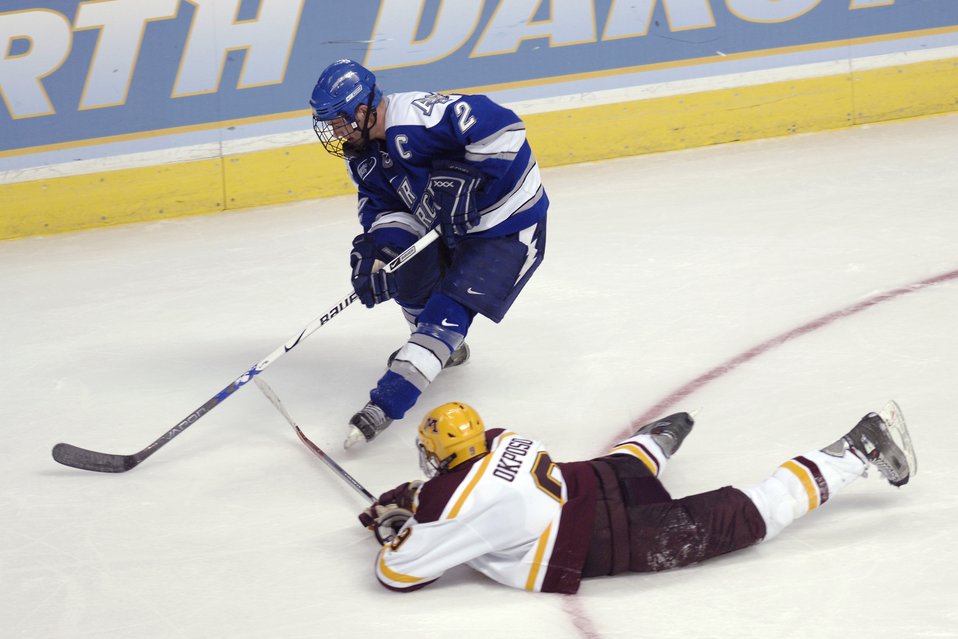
Gophers ground Falcons season during third period rally

Falcon defenseman and team captain Billy Devoney back hands the puck from Minnesota's Kyle Okposo during the NCAA West Regional March 24 at the Pepsi Center in Denver. Devoney was one of eight seniors playing their last game in a Falcon uniform.